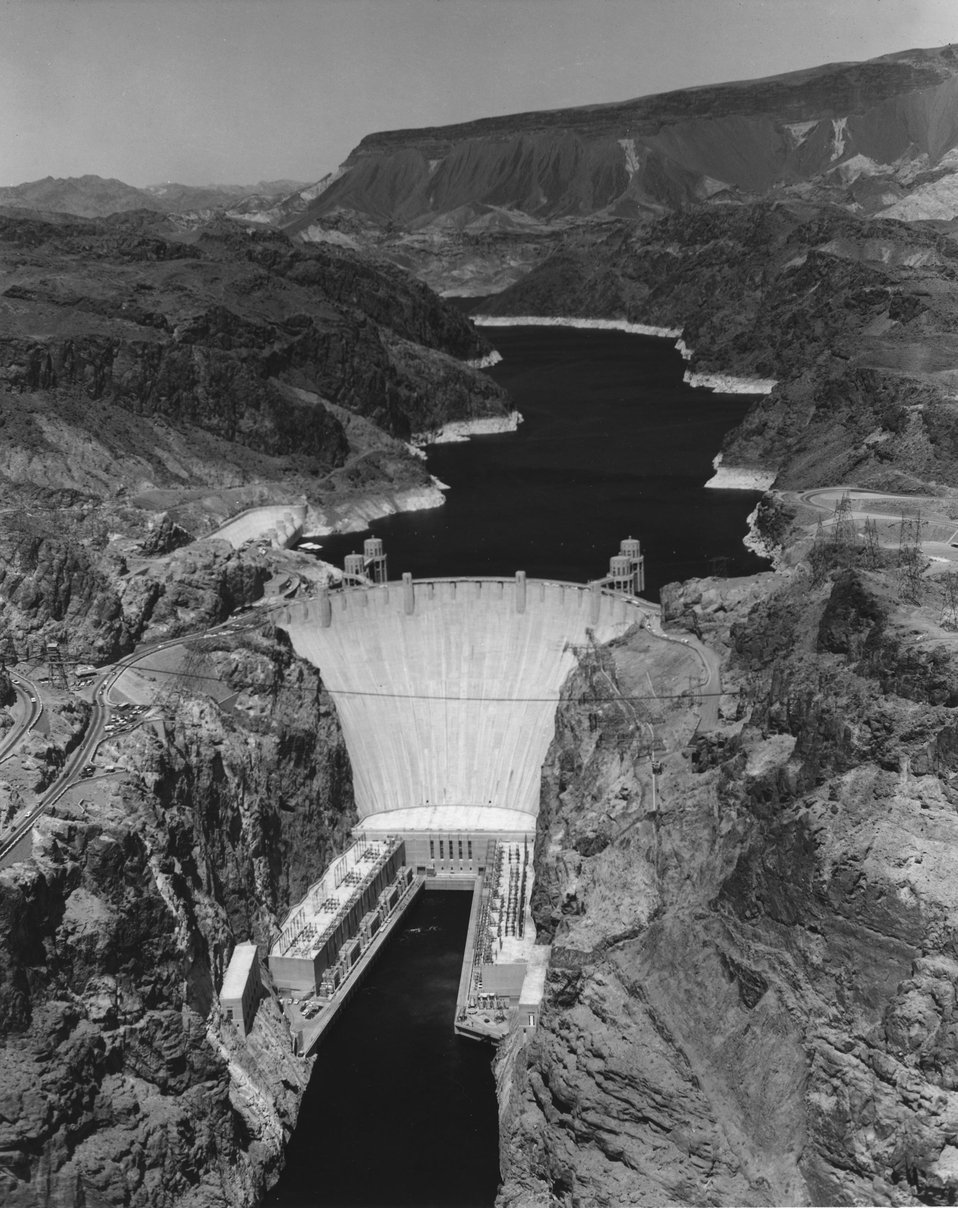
Hoover Dam and Lake Mead -- Boulder Canyon Project -- Ariz. - Nev. Aerial view of Hoover Dam and Lake Mead. c. 1970